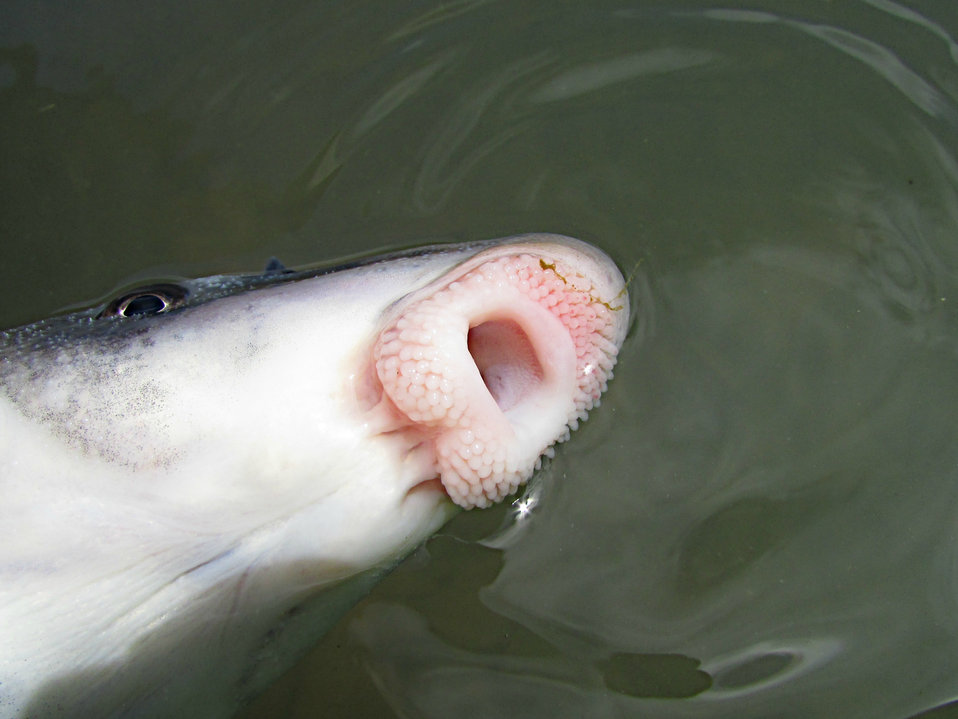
Lips

March 20 was the first day of spring, which means it's spawning season!

These lips belong to a blue sucker. This fish will be one of our first spawners of the year.